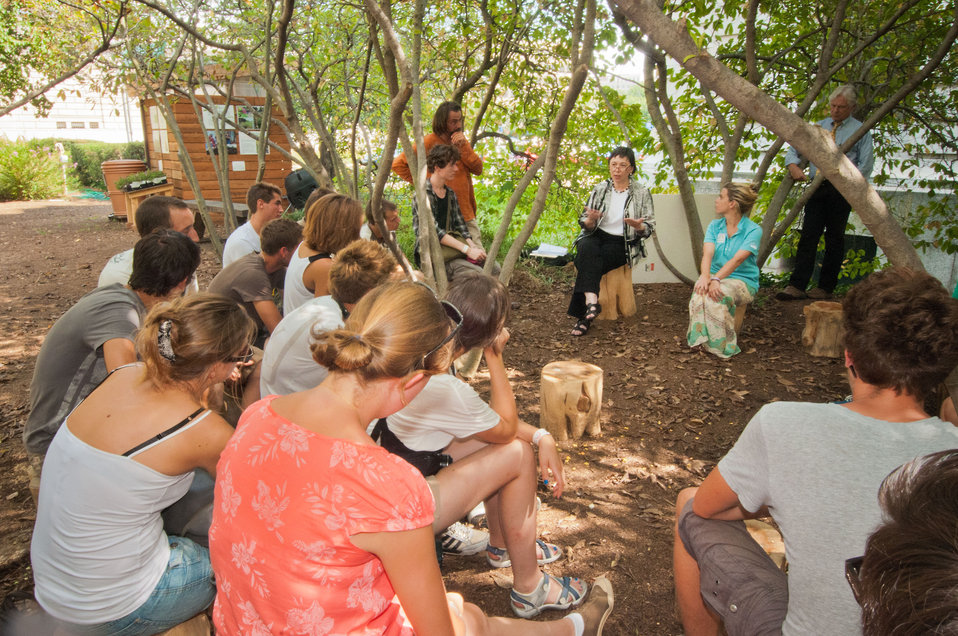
U.S. Department of Agriculture (USDA) Foreign Agriculture Service (FAS) Associate Administrator Janet Nuzum (center) explains the breadth and scope USDA has on national and international economics, nutrition, trade, and agriculture production to French students from Ecole Du Breuil, School of Horticulture and Landscaping, Paris, France. The students visited USDA’s People’s Garden in Washington, D.C., on Tuesday, Sept. 4, 2012. The class was lead by Landscape Architect Professor Hervé Dardillat. The students are on a two-week U.S. tour, which includes a visit to the White House Kitchen garden, as well as gardens and parks in Washington, D.C. The students will also visit Temple University in Philadelphia, PA in addition to parks and gardens in New York City, NY where they will also stay with host families and work on community gardens.